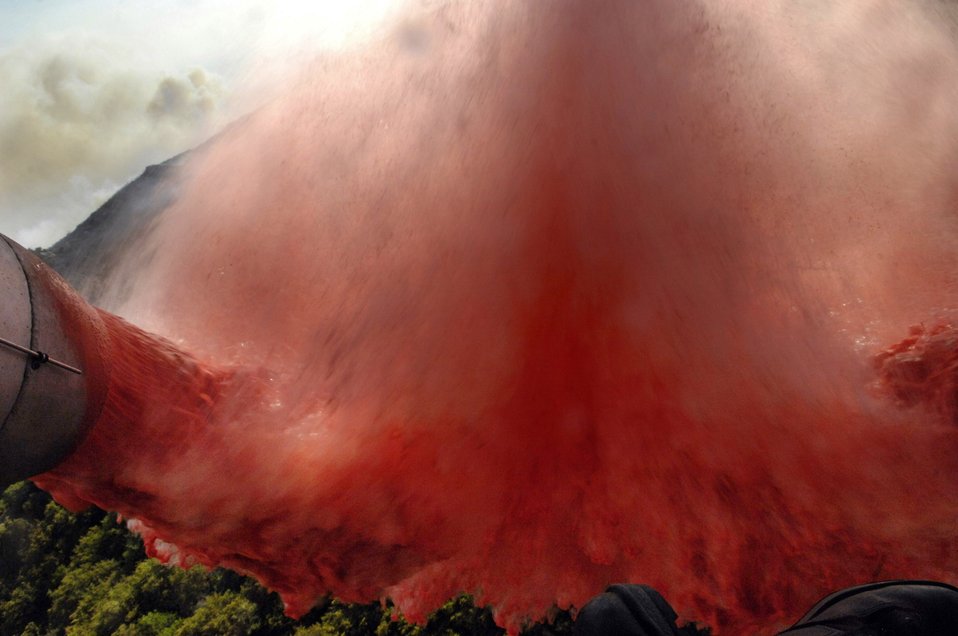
Modular Airborne Firefighting System

Fire retardant is deployed from the back of a modular airborne firefighting system-equipped C-130 Hercules July 3 over the Goleta fire near Santa Barbara, Calif. The aircraft is from the Wyoming Air National Guard's 187th Airlift Squadron.